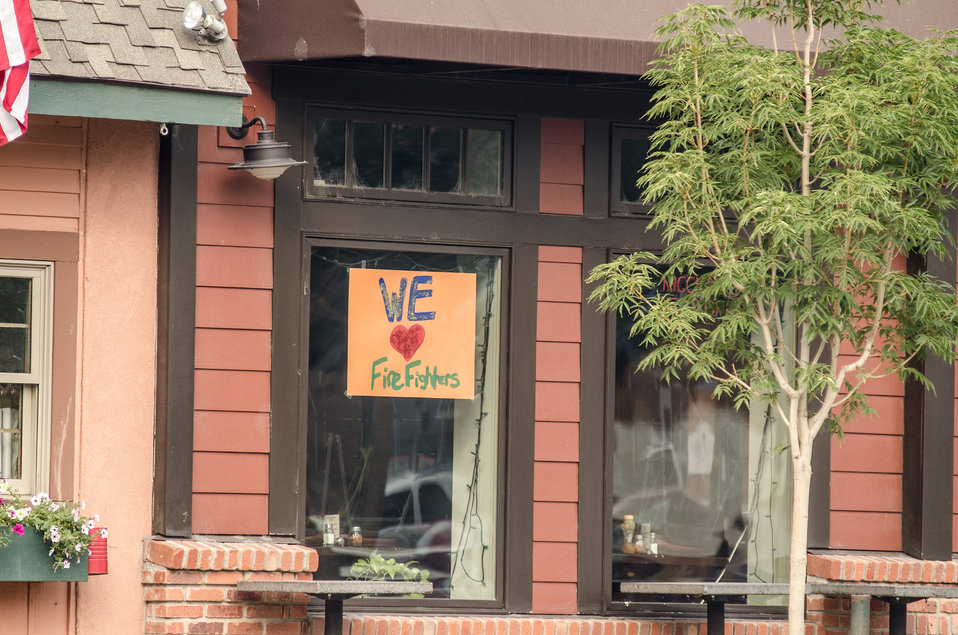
Signs of support posted by residents and businesses are seen throughout the Beaver Creek Fire Area, in Hailey (seen here), Sawtooth National Forest and Bureau of Land Management lands, on Wednesday, Aug 21, 2013.